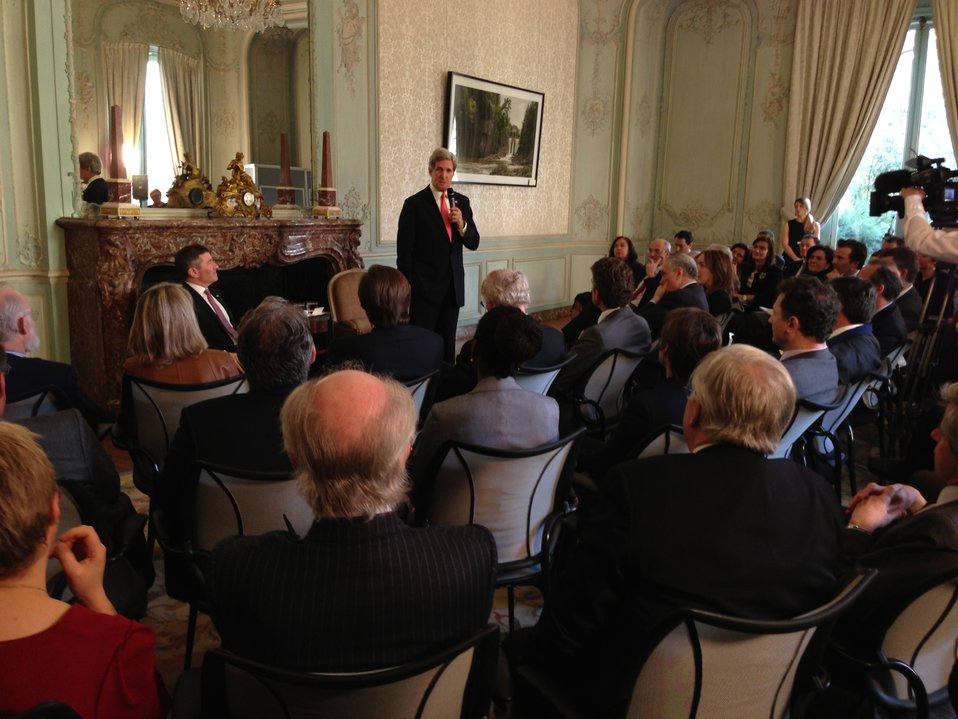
Secretary Kerry Speaks With French Business Leaders in Paris

U.S. Secretary of State John Kerry speaks with French business leaders during an economic forum at the residence of the U.S. Ambassador to France Charles Rivkin in Paris, France March 27, 2013.